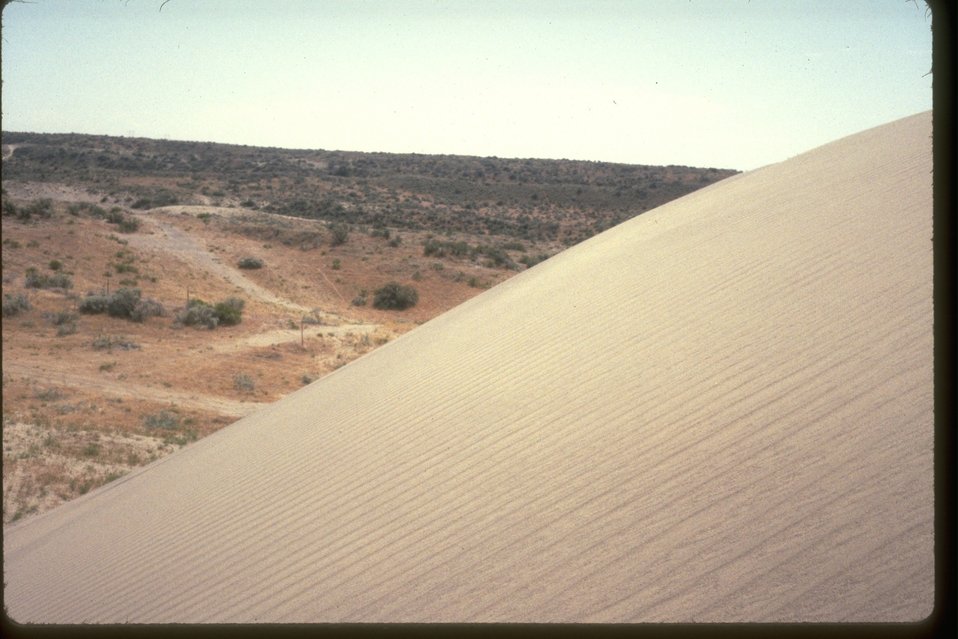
Sand dune in the Juniper Forest in Franklin County, Washington.